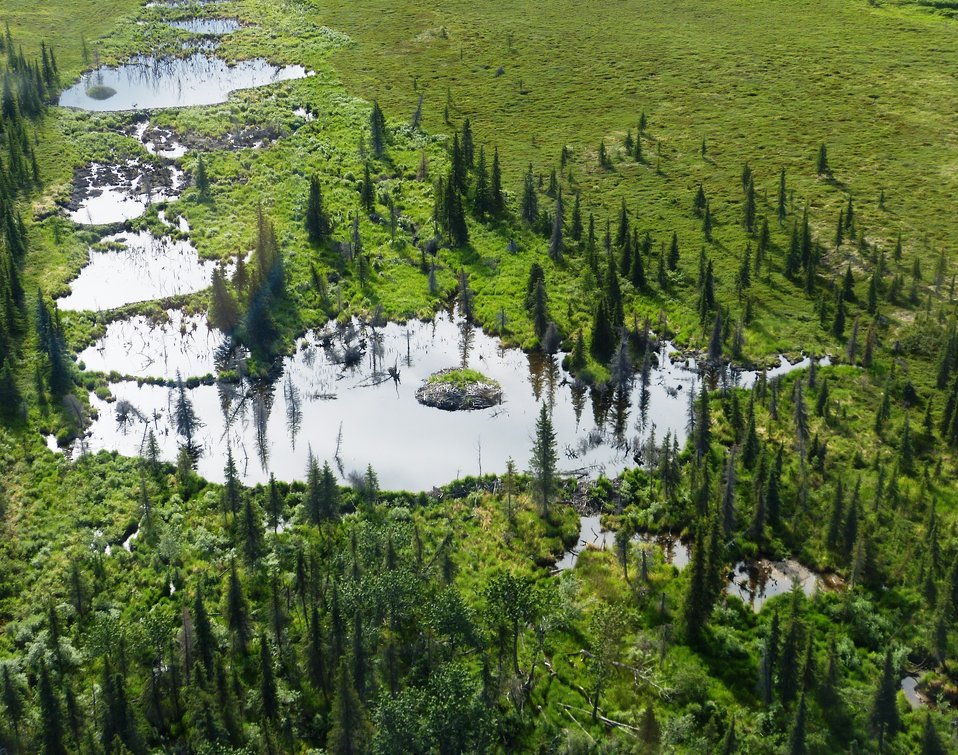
Yukon Delta NWR Wetlands

Boreal wetlands, Yukon Delta National Wildlife Refuge

Photo by: Kristine Sowl,
USFWS, Yukon Delta NWR,
July 10, 2013